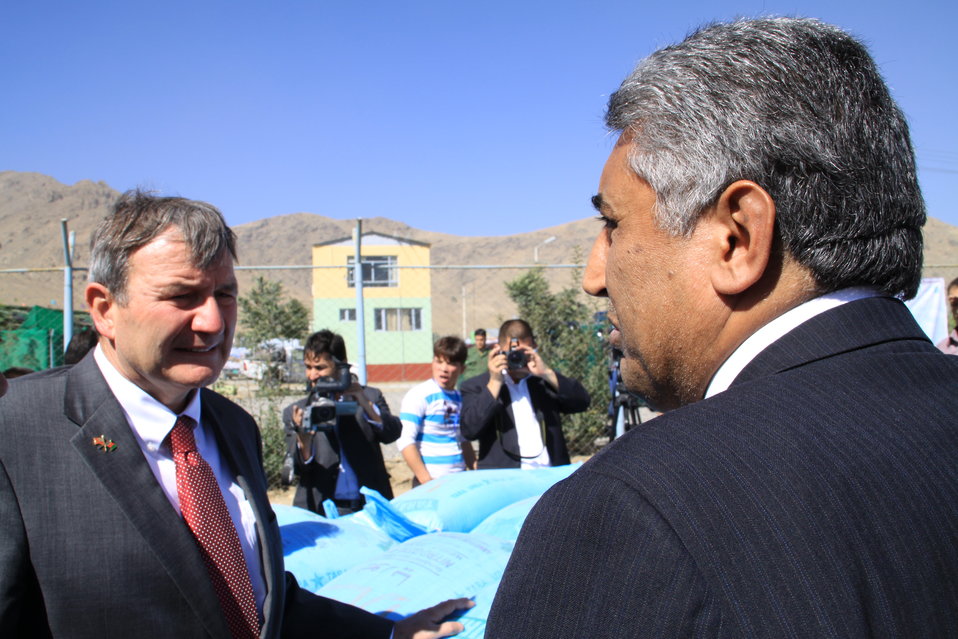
AVIPA Plus Wheat Seed Distribution 101005

US Ambassador Karl Eikenberry and USAID Acting Mission Director Kevin Brownawell joined the Minister of Agriculture, Irrigation and Livestock, H.E. Minister Mohammed Rahimi in signing a Memorandum of Understanding and distributing vouchers to area farmers for wheat and fertilizer.

US Ambassador Karl Eikenberry and USAID Acting Mission Director Kevin Brownawell joined the Minister of Agriculture, Irrigation and Livestock, H.E. Minister Mohammed Rahimi in signing a Memorandum of Understanding and distributing vouchers to area farmers for wheat and fertilizer.

US Ambassador Karl Eikenberry and USAID Acting Mission Director Kevin Brownawell joined the Minister of Agriculture, Irrigation and Livestock, H.E. Minister Mohammed Rahimi in signing a Memorandum of Understanding and distributing vouchers to area farmers for wheat and fertilizer.